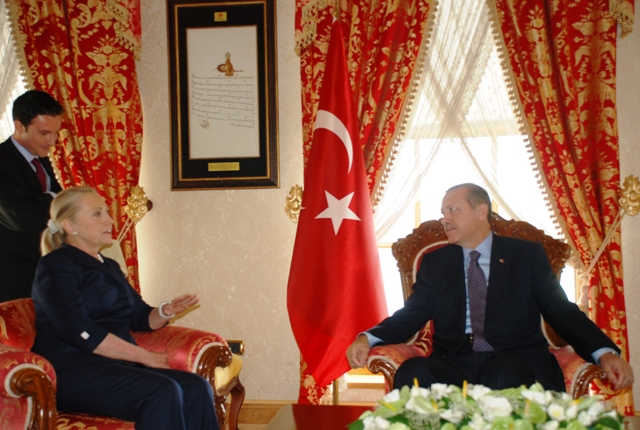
Secretary Clinton Meets With Turkish Prime Minister Erdoğan

U.S. Secretary of State Hillary Rodham Clinton, left, meets with Turkish Prime Minister Recep Tayyip Erdoğan, right, and Turkish Foreign Minister Ahmet Davutoğlu, not pictured, at the Dolmabache Palace in Istanbul, Turkey, on August 11, 2012.